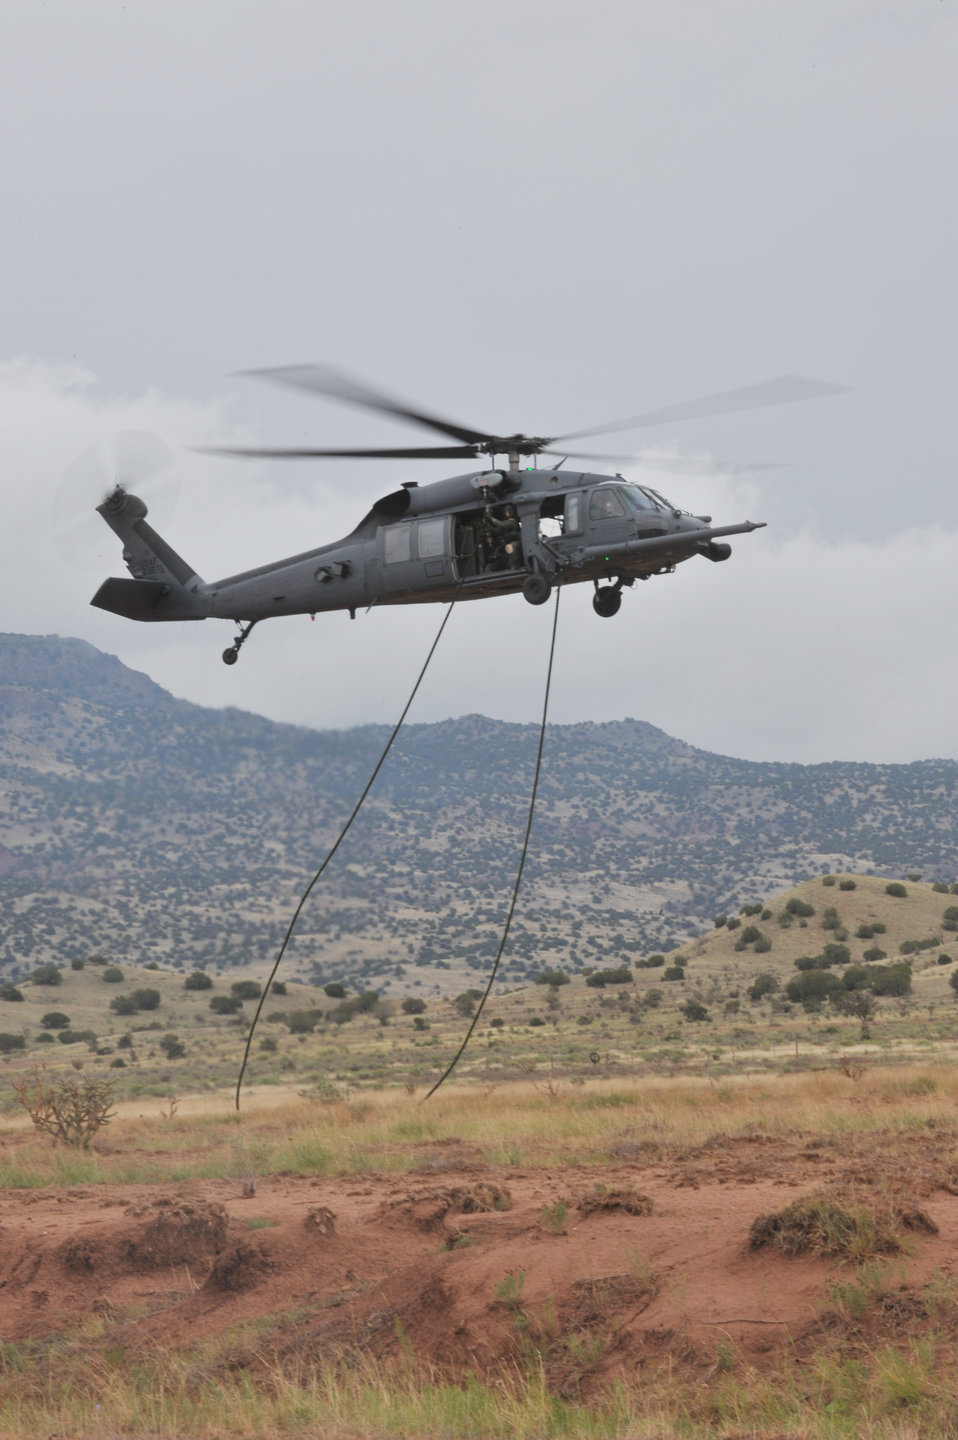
Helicopter crews train at Kirtland AFB

The crew of an HH-60G Pave Hawk drops fast ropes during a training flight near Kirtland Air Force Base, N.M., Aug. 25, 2009.